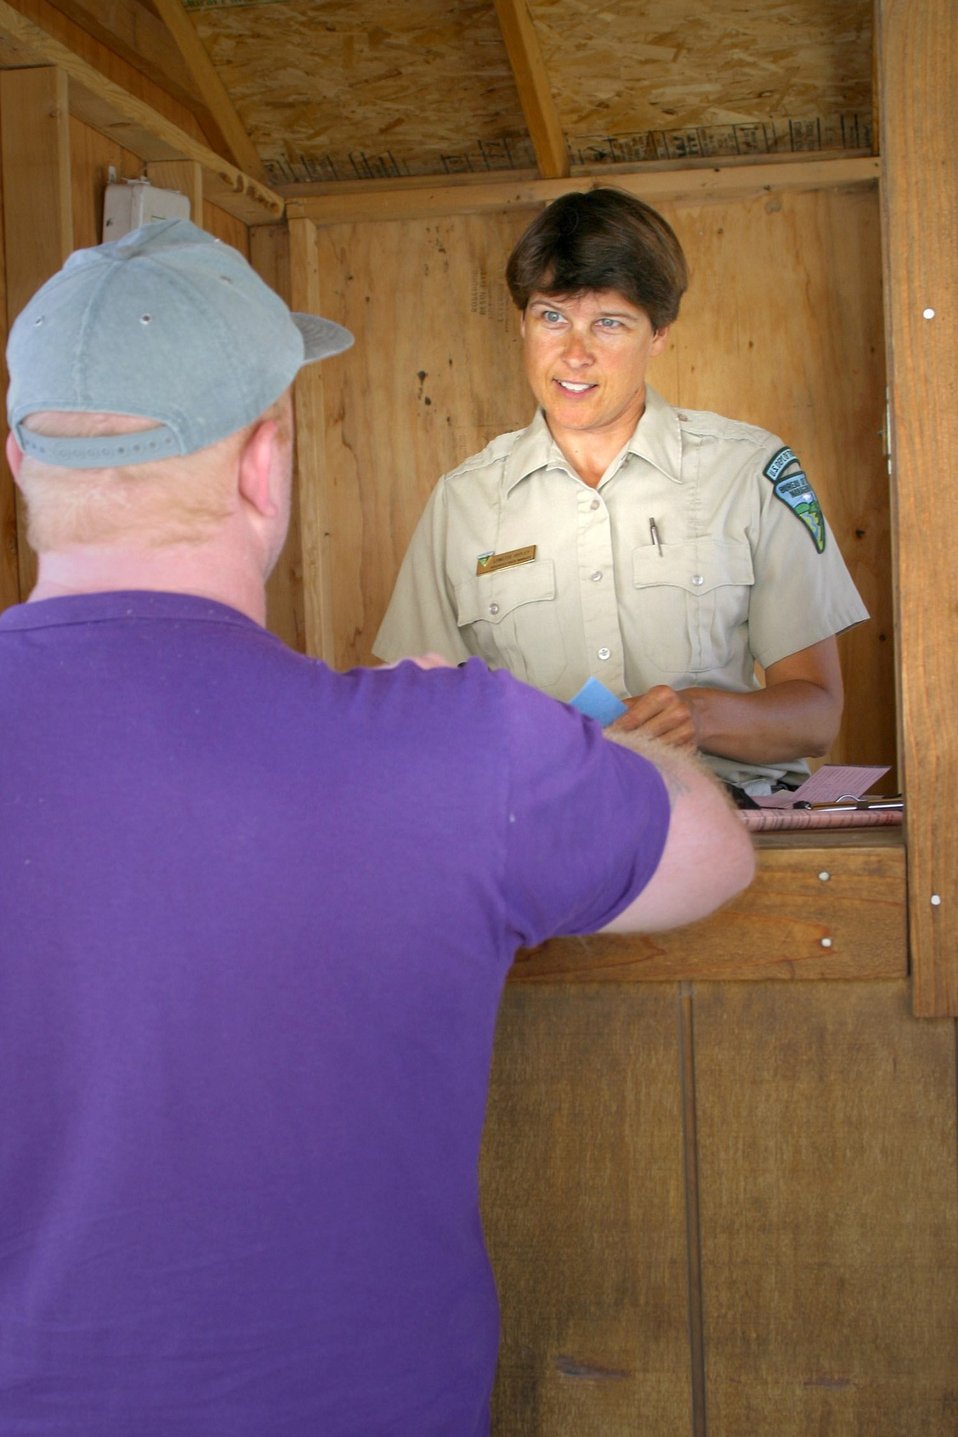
BLM River Rangers at Harphamp Flat check permits and issue boat tags while reminding users of current safety and fire regulations.